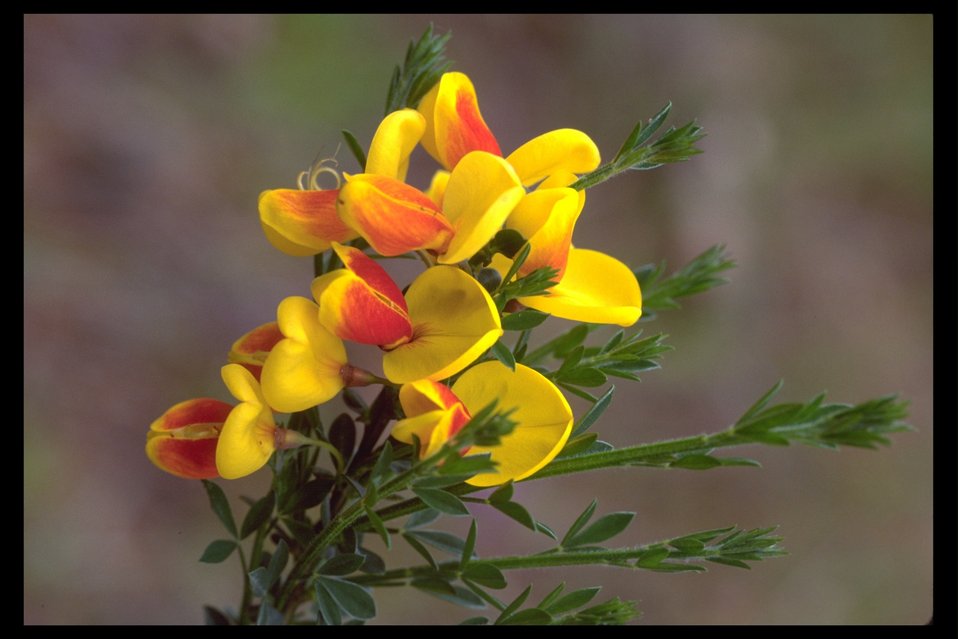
Scotch (Scot's) Broom, a noxious weed, (Cytisus scoparius) along the Rogue River Drive at Shady Cove.